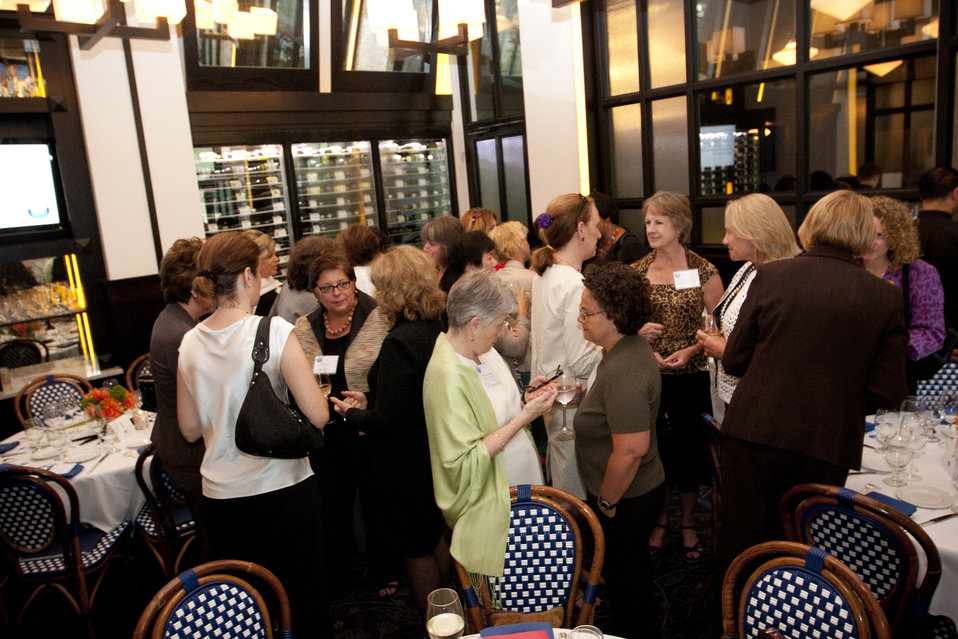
WomenandEnergy 22